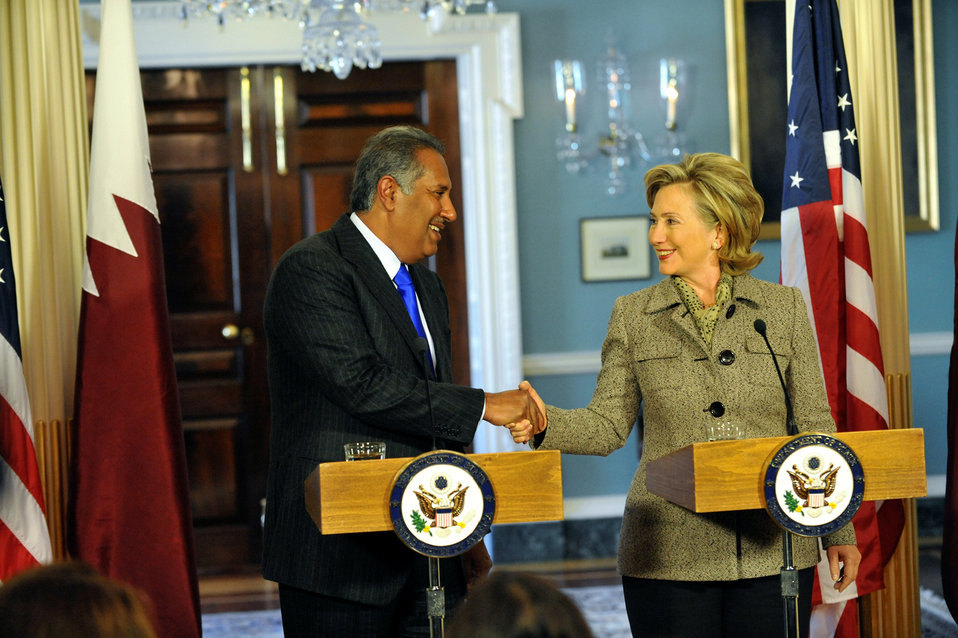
Secretary Clinton Meets With Qatar Foreign Minister

U.S. Secretary of State Hillary Rodham Clinton meets with Qatar Foreign Minister Sheikh Hamad Bin Jassim Bin Jabr Al-Thani at the U.S. Department of State in Washington, DC January 4, 2010.